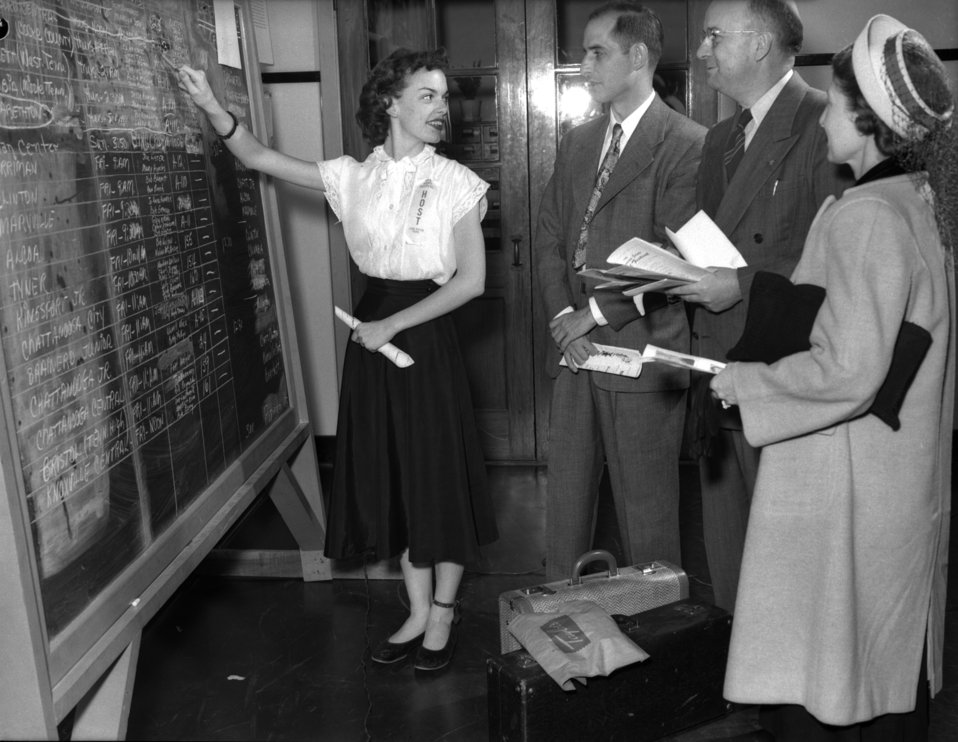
Tennessee State Band Festival Oak Ridge

004500-8k DOE photo by Ed Westcott Tennessee State Band Festival Oak Ridge Tennessee 4/29/1948